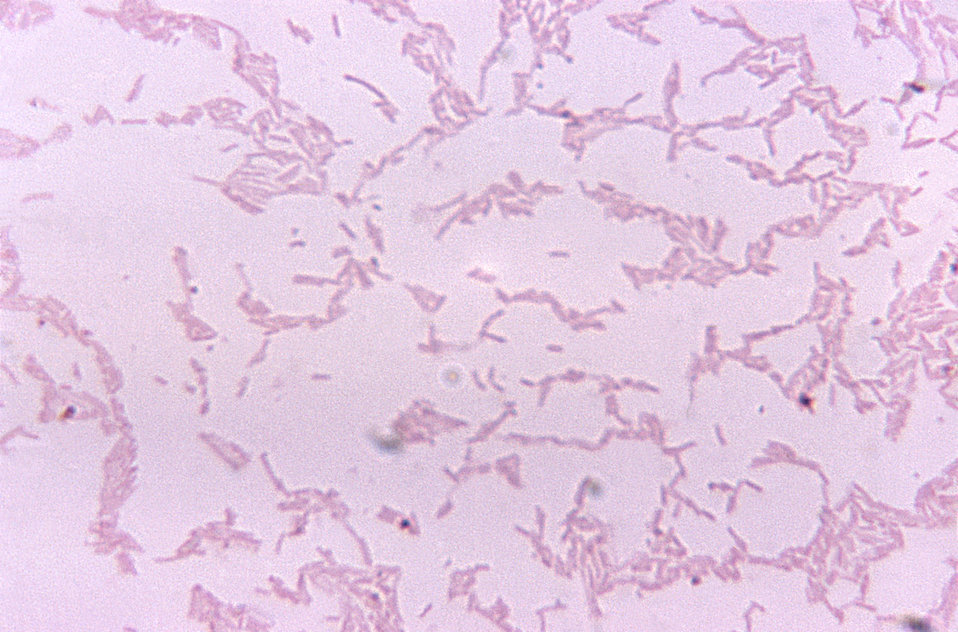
This micrograph depicts Bacteroides trichoides bacteria cultured in blood agar medium for 48 hours.